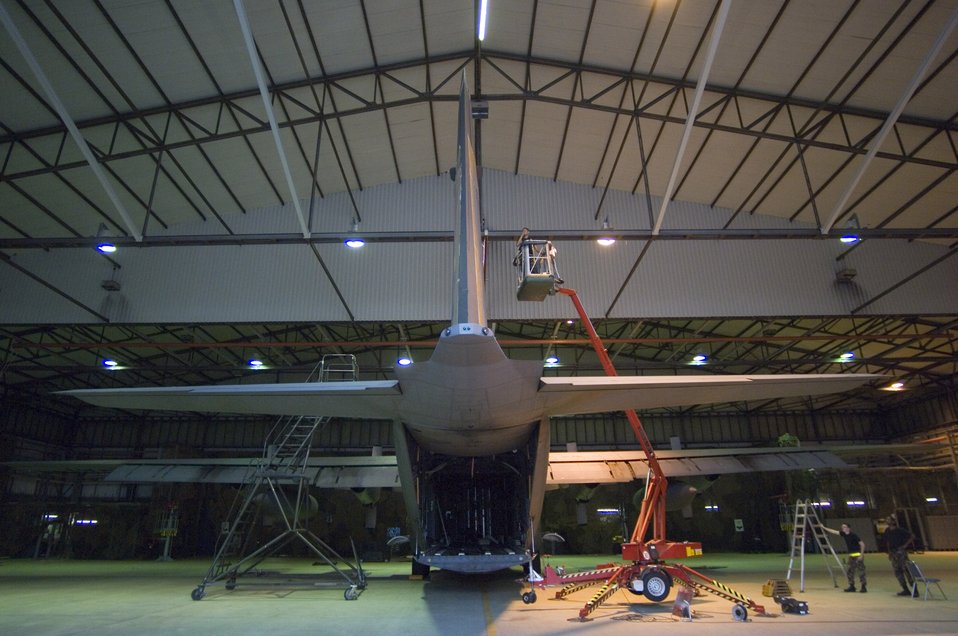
Telltale signs

Airmen from the 86th Maintenance Squadron prepare to change the tail marking on one of two C-130 Hercules on July 26 that have been assigned to the 37th Airlift Squadron at Ramstein Air Base, Germany. The aircraft were transferred to Ramstein from Yokota AB, Japan.